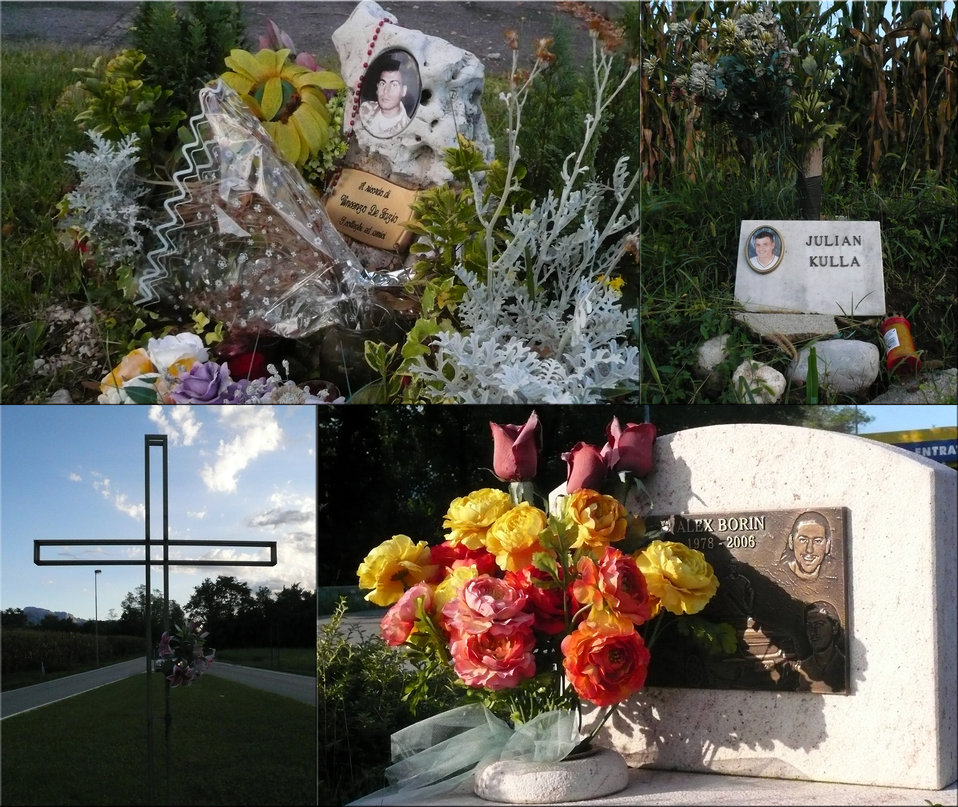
Smart driving choices make a world of difference

These memorials serve as a constant reminder of the hazards associated with operating a vehicle or motorcycle and the importance of focusing 100 percent on the task of driving or riding and doing it as safe as possible.